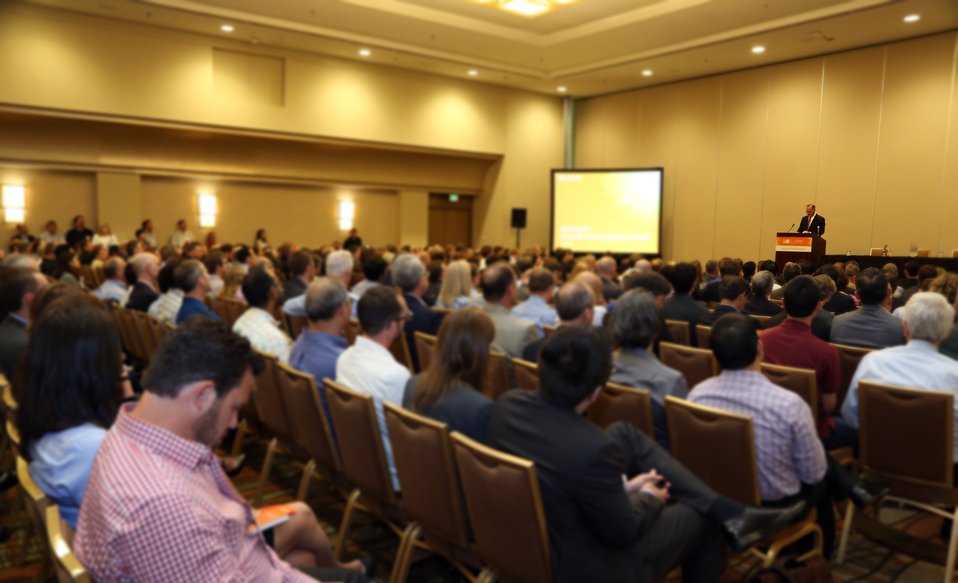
Opening Session 5

SunShot Director Minh Le speaking at the opening session.